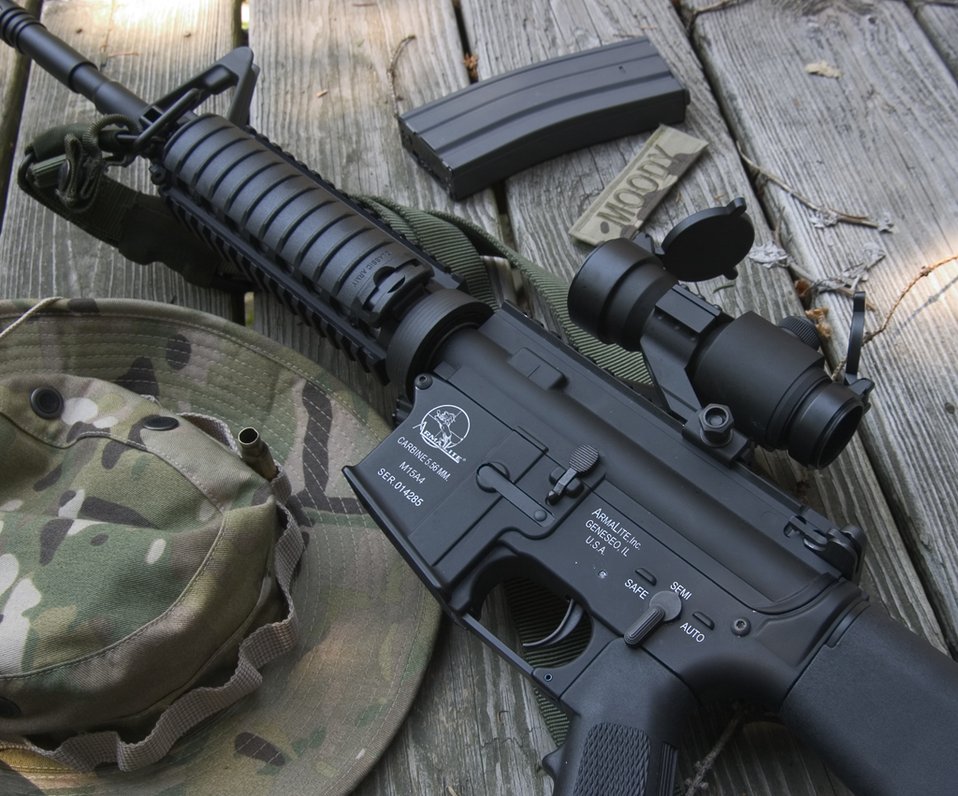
Čeština: Airsoftová zbraň Classic Army M15A4 SPC (replika zbraně M4) s kolimačním zaměřovačem Airsoft gun Classic Army M15A4 SPC w/ Aimpoint Scope; this airsoft gun shoots at about 350-400 fps (feet per second) Español: Classic Army M15A4 (M4).